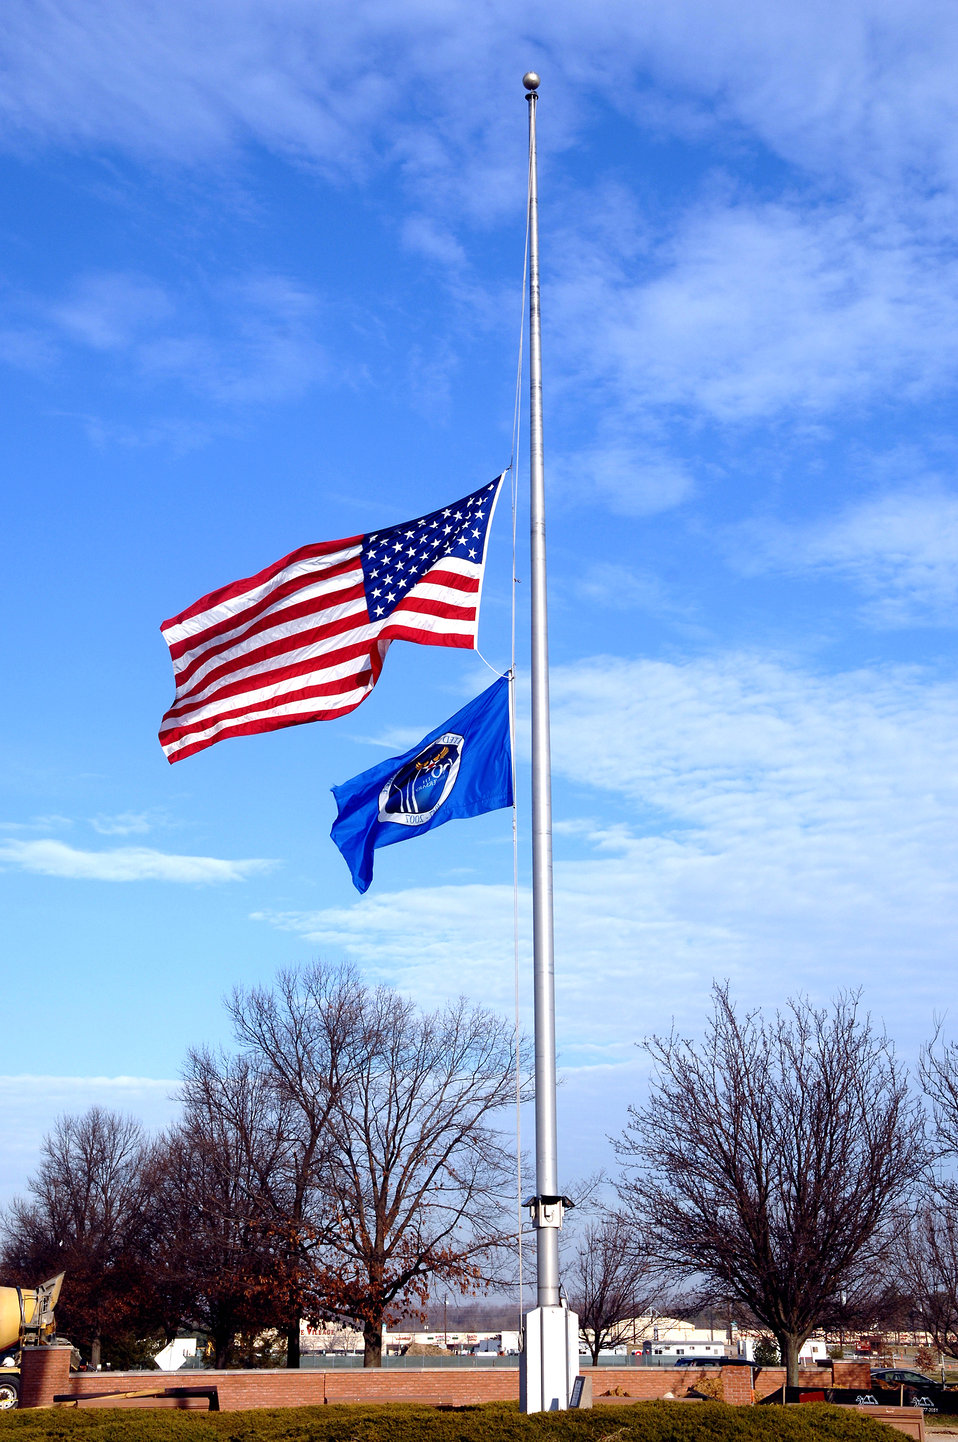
Honoring President Ford

The American flag at Andrews Air Force Base, Md. flies at half staff Dec. 29 in honor of former President Gerald Ford who died Dec. 26 at age 93. President George W. Bush has declared Jan 2 a national day of mourning.